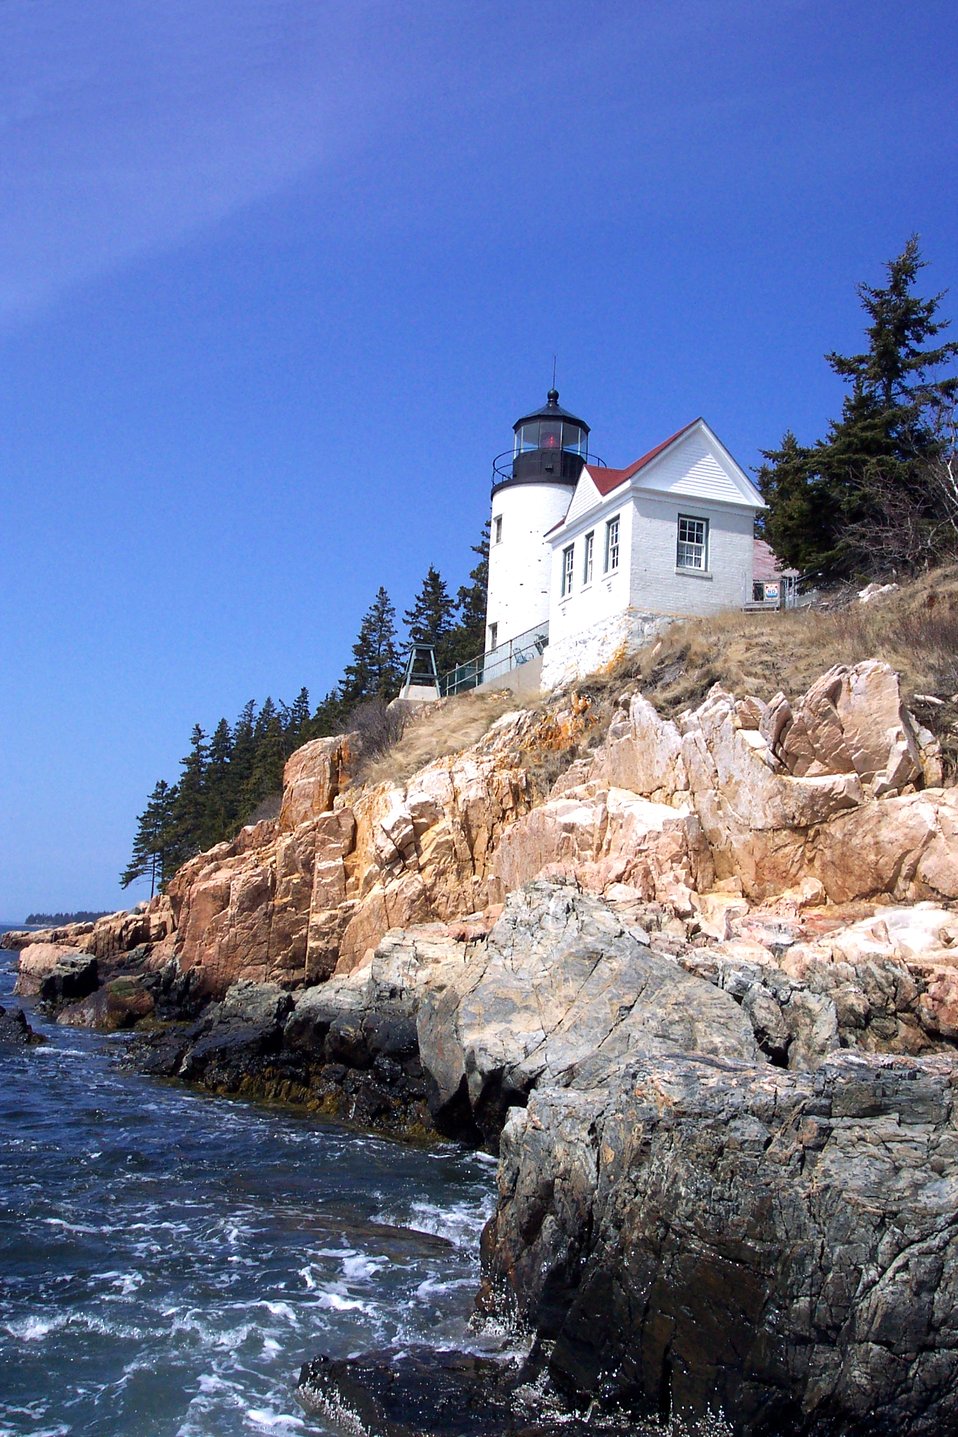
Bass Harbor Head Lighthouse from below and looking east at the shoreline.